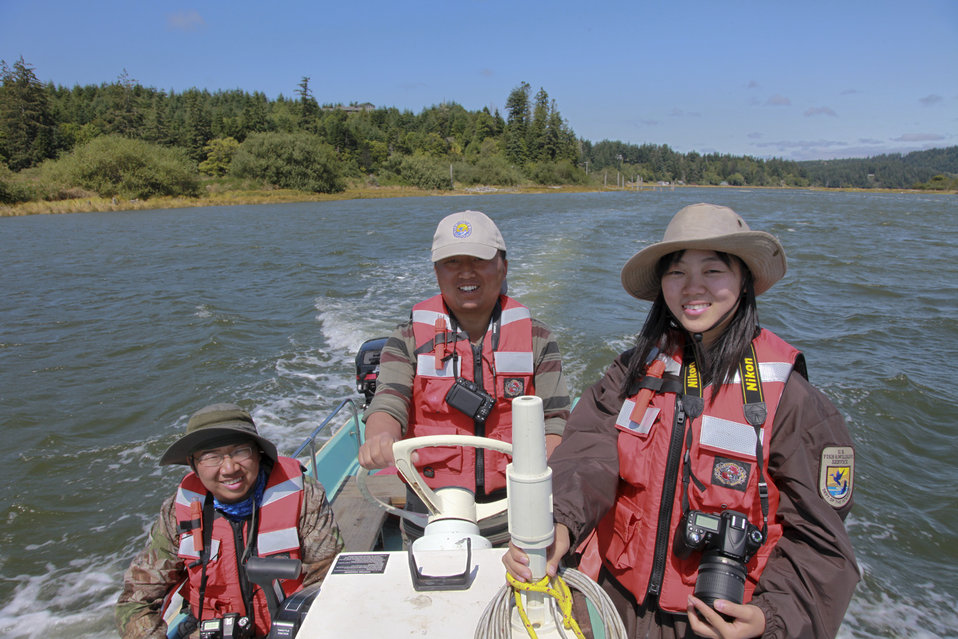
On the Coquille River - Xu and Jia with translator Miao Yu